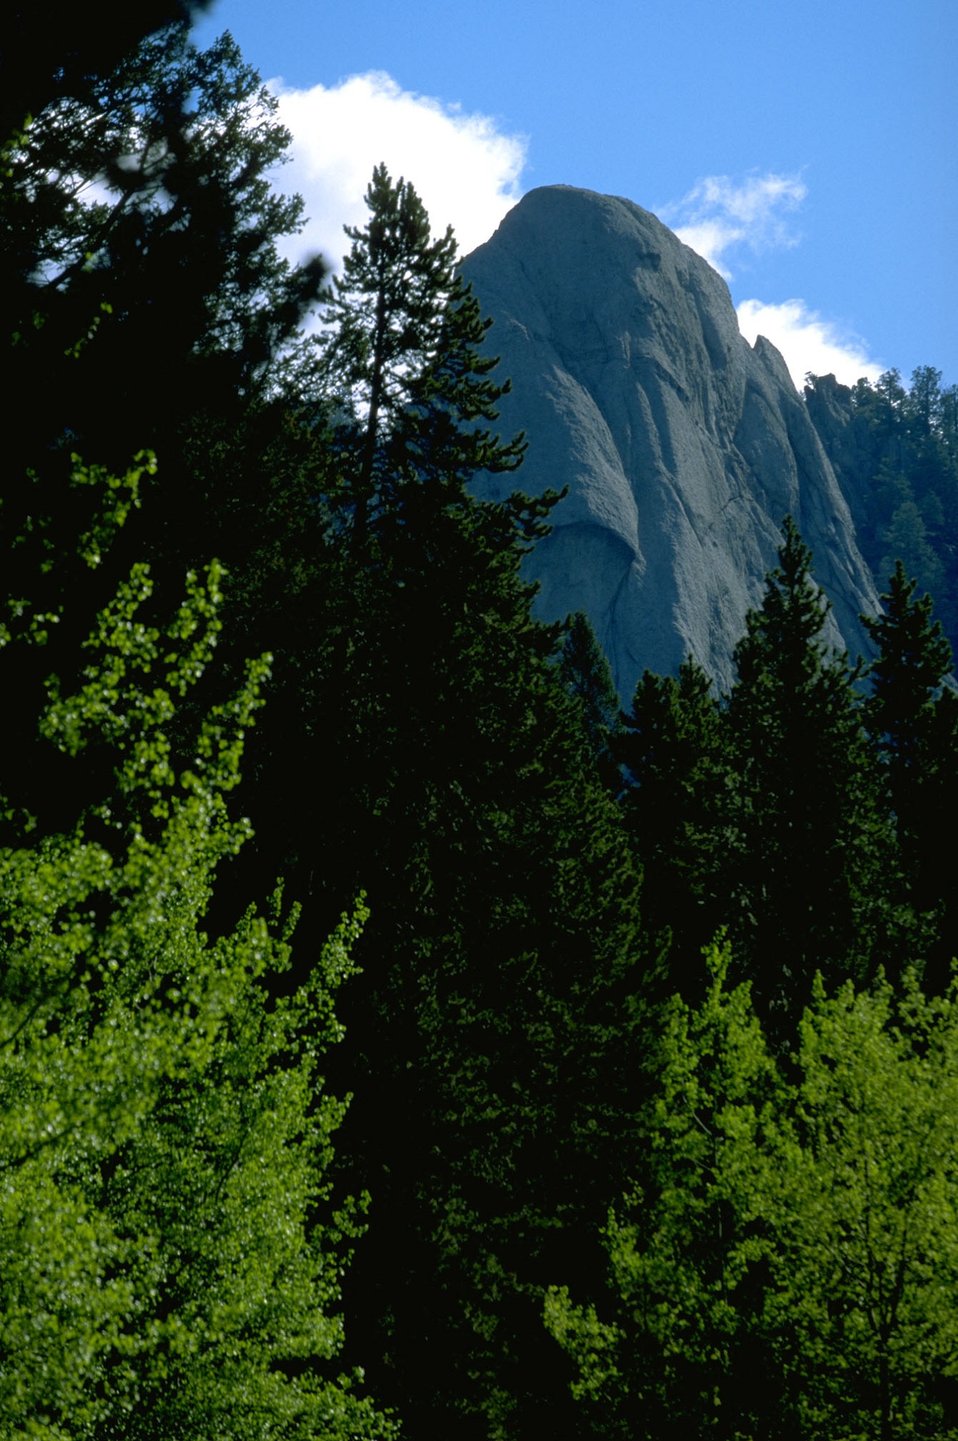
Close up of rock formation